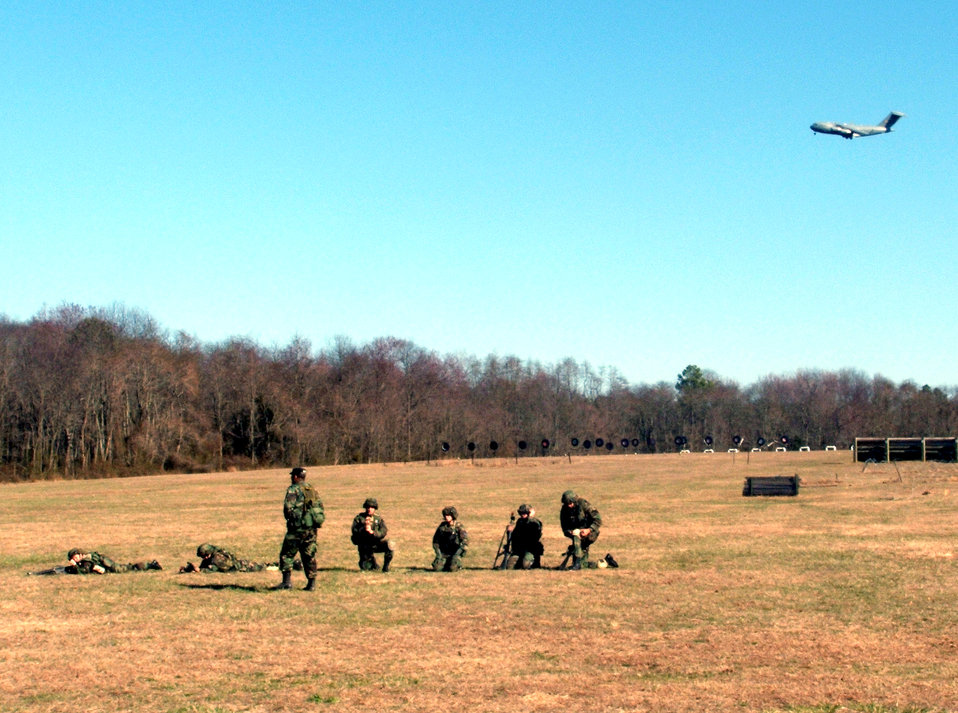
Airmen improve combat tactics

Airmen practice combat tactics and squad patrolling maneuvers on Monday, March 27, 2006, during the Air Force Integrated Contingency Skills Training Course 06-3 at Fort Dix, N.J. A Globemaster III from McGuire Air Force Base, N.J., flies overhead. The Air Mobility Warfare Center's 421st Combat Training Squadron instructors trained more than 140 Airmen in combat tactics and convoy operations to prepare for deployments for the Air Force.